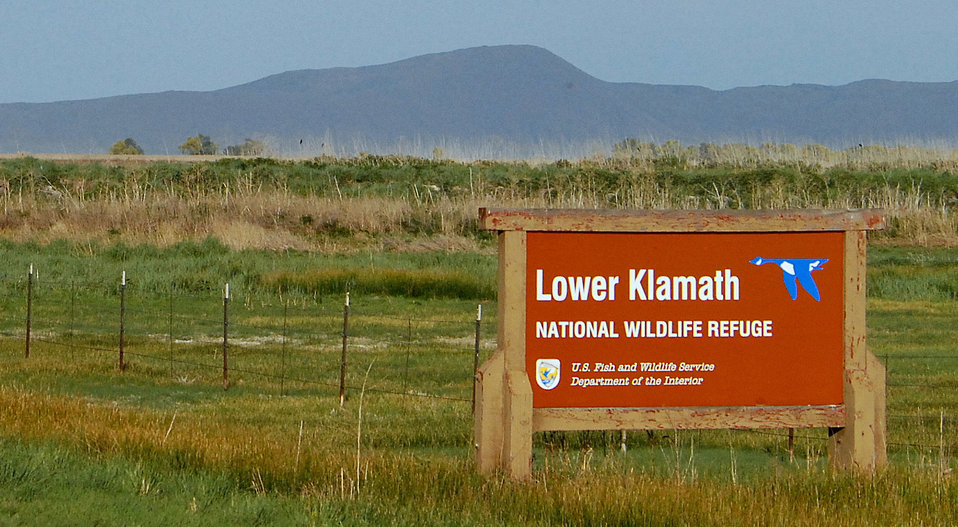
Lower Klamath NWR Entrance